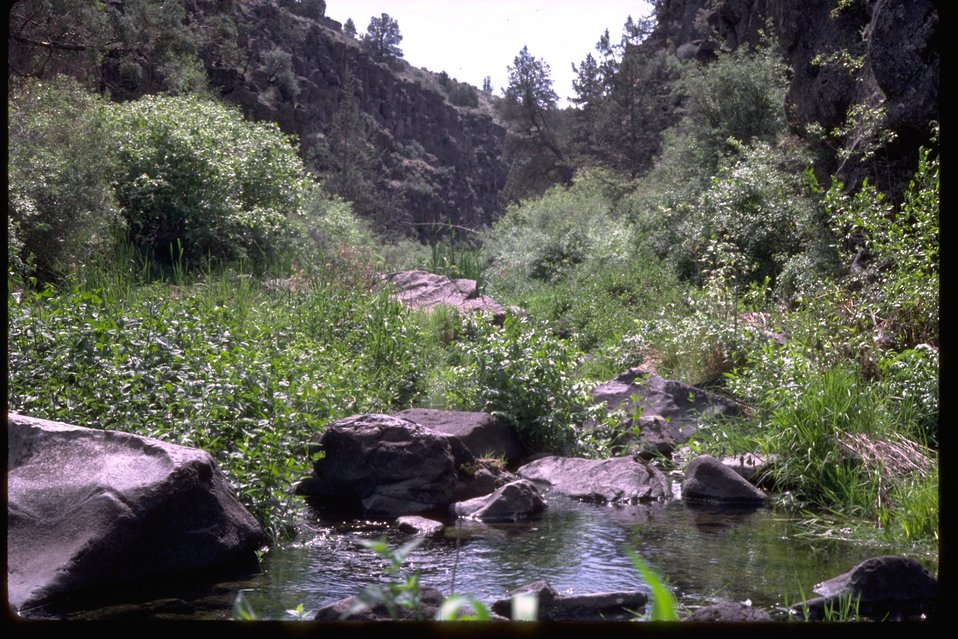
Small pool in Willow Creek west of the Madras.